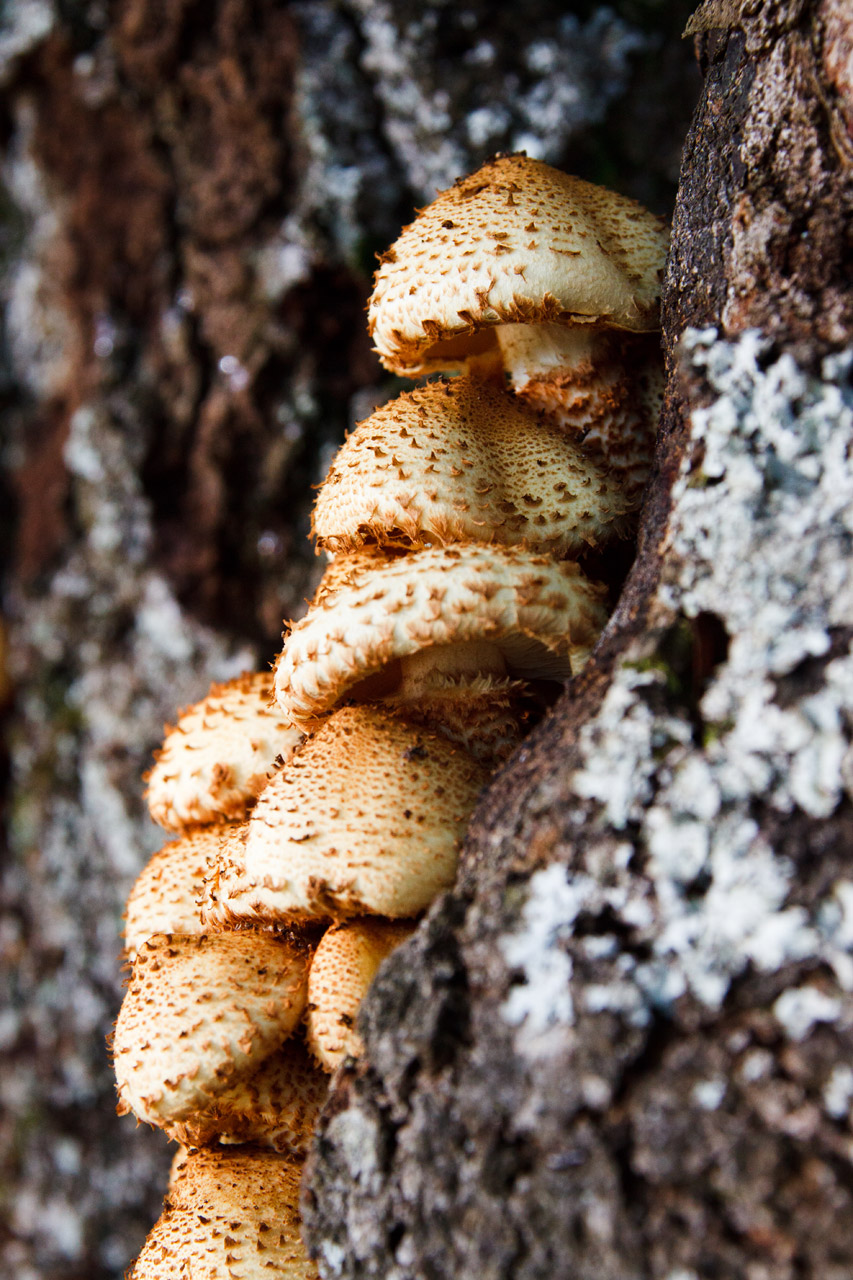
Pholiota squarrosa mushrooms on the tree trunk.